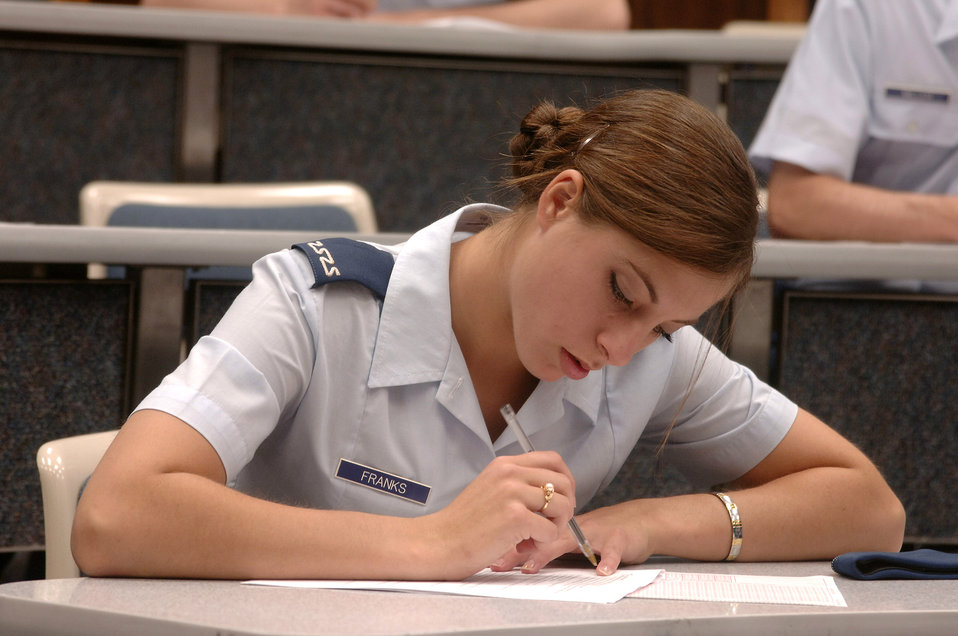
Life at the academy

Freshman Cadet Lauren Franks takes the Military Knowledge Test during the Academy Cadet Wing Unit Compliance Inspection in April at the U.S. Air Force Academy.